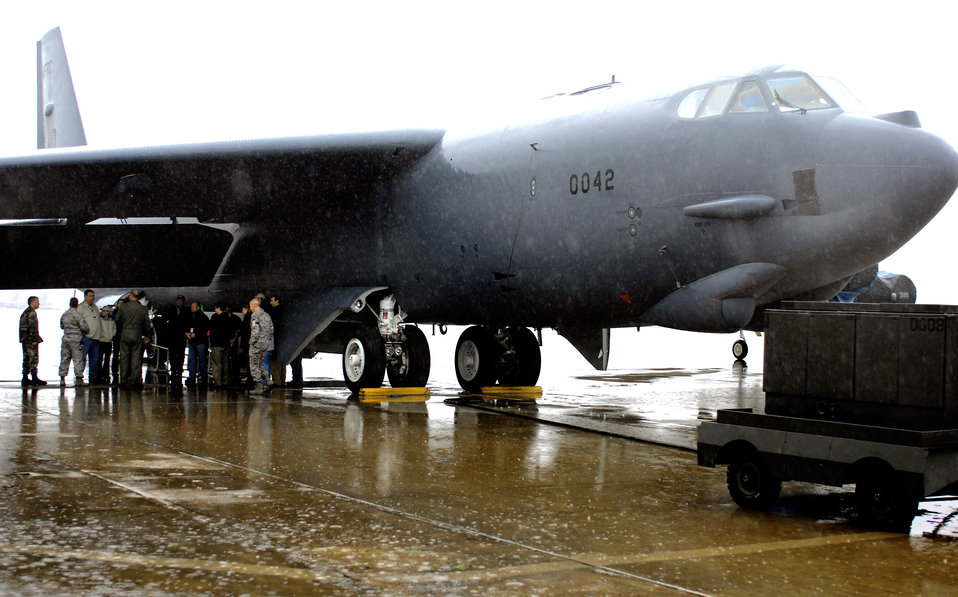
Airmen participate in 2009 ESPN Bassmaster Classic

Members of ESPN tour a B-52 Stratofortress Feb. 21 at Barksdale Air Force Base, La. Capt. Jerry Reynolds, a B-52 instructor aircraft commander from the 93rd Bomb Squadron, along with flight chiefs discussed the capabilities of the aircraft and answered questions.